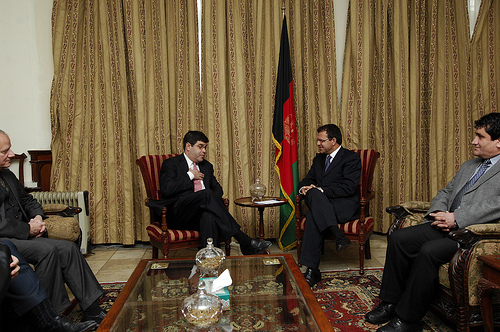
Wolin and Afghan Finance Minister Zakhilwal

Deputy Secretary Wolin and Afghan Finance Minister Zakhilwal discussed strategies for promoting sound economic policymaking, combating illicit financing, strengthening systems of public financial management, and increasing financial sector development and transparency.